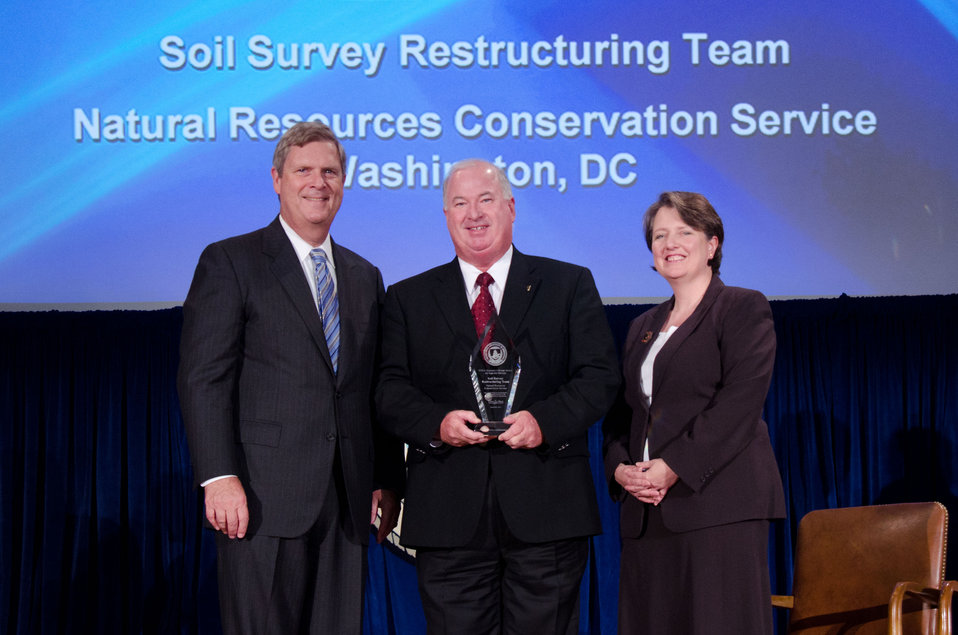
Agriculture Secretary Tom Vilsack (l) and Deputy Secretary Kathleen Merrigan (r), presents the Award to Soil Survey restructuring Team, Natural Resources Conservation Service, Washington, DC. Michael L. Golden, group Leader. For restructuring the Soil Survey Program to improve its efficiency, cost-effectiveness and responsiveness while also promoting a family friendly workplace for employees. On Wednesday, September 14, 2011 in the Jefferson Auditorium at the US Department of Agriculture in Washington, DC.